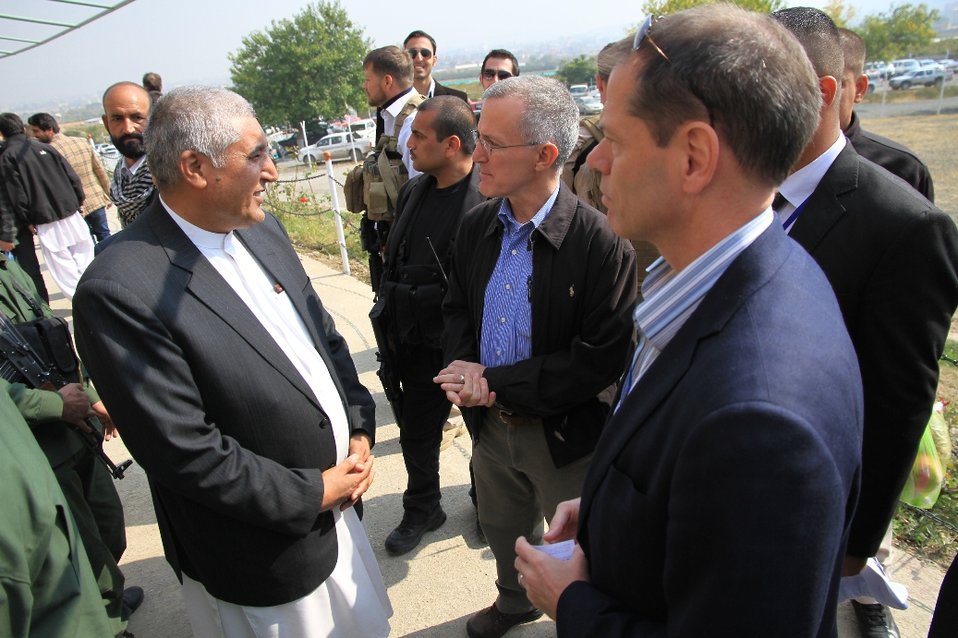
Ag.Fair, October 2013

H.E Muhammad Asif Rahimi (L) Minister of Agriculture, Irrigation and Livestock and William Hammink (C) and Larry Sampler (R) discuss Afghan agriculture developments